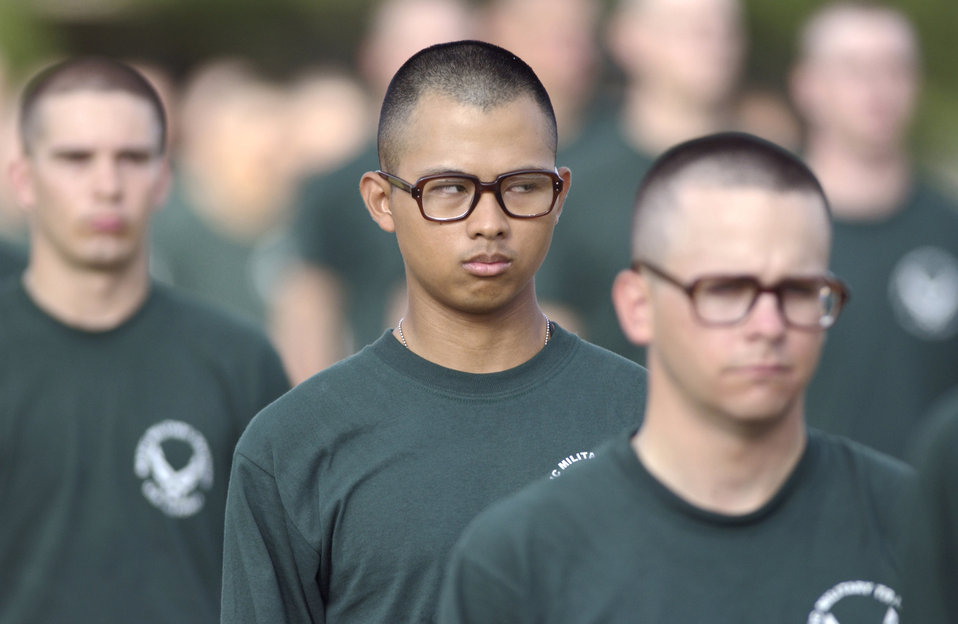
Tomorrow's leaders

LACKLAND AIR FORCE BASE, Texas -- One day before graduation from Basic Military Training, Airmen here prepare for their 2.5-mile formation run which marks the final days of their six-week basic training. As the Air Force transforms into a force that focuses more on physical fitness, so has military training.